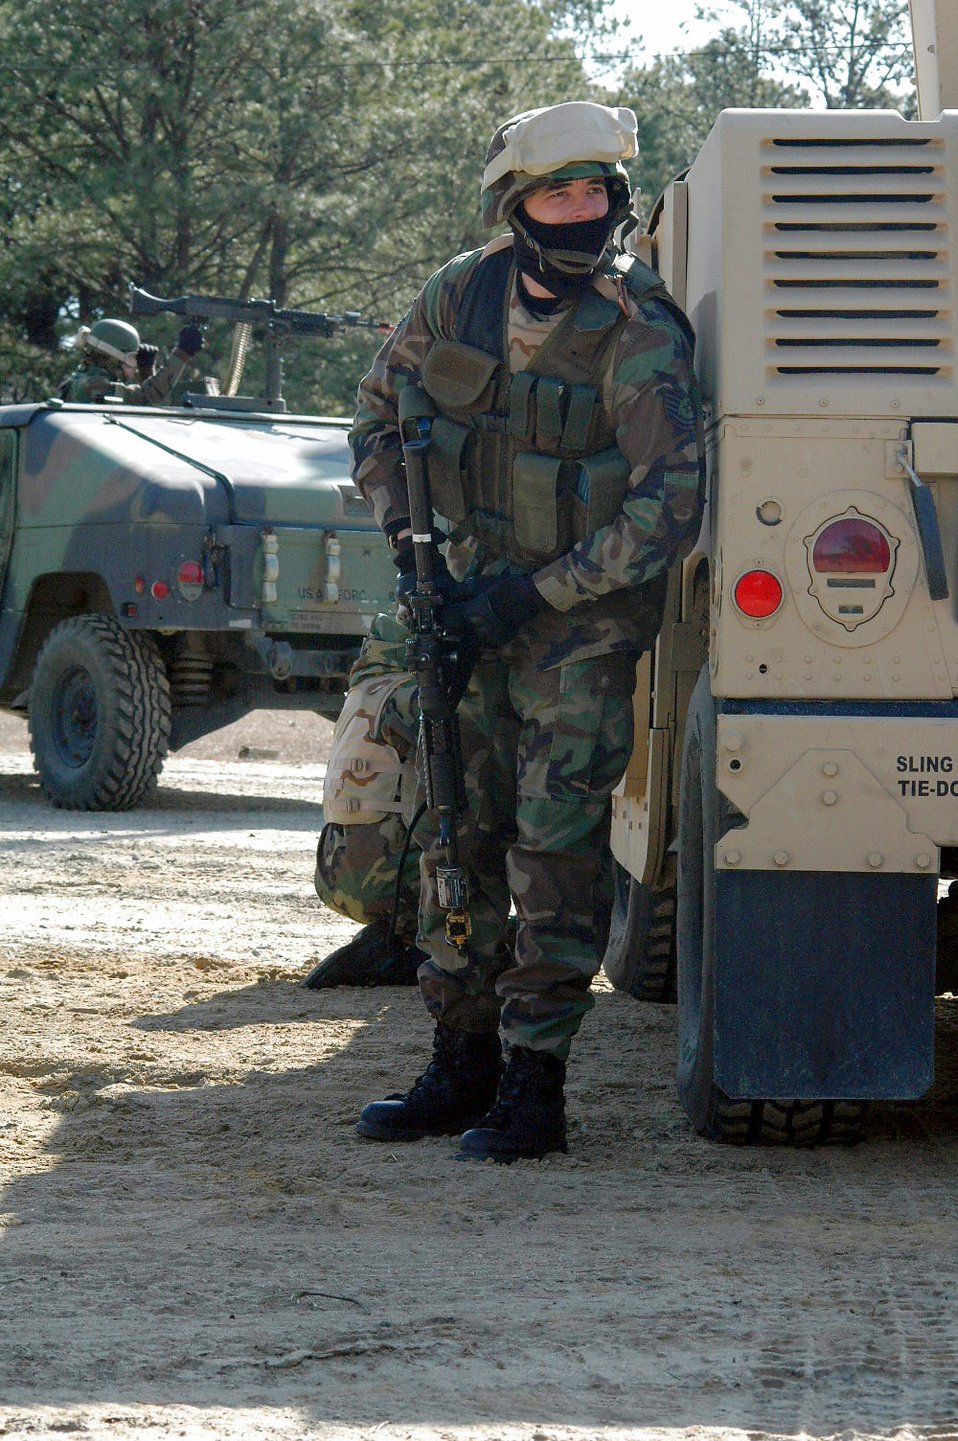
Warrior training

Tech. Sgt. David Barry takes up a defensive position during a scenario for training for the course Feb. 20 on a range at Fort Dix, N.J. The course is taught by members of the Air Force Expeditionary Center's Expeditionary Operations School and 421st Combat Training Squadron and prepares security forces Airmen for upcoming deployments. Sergeant Barry is a 721st Security Forces Squadron member from Cheyenne Mountain Air Force Station, Colo., and a student in the Air Force Phoenix Warrior Training Course 08-3.